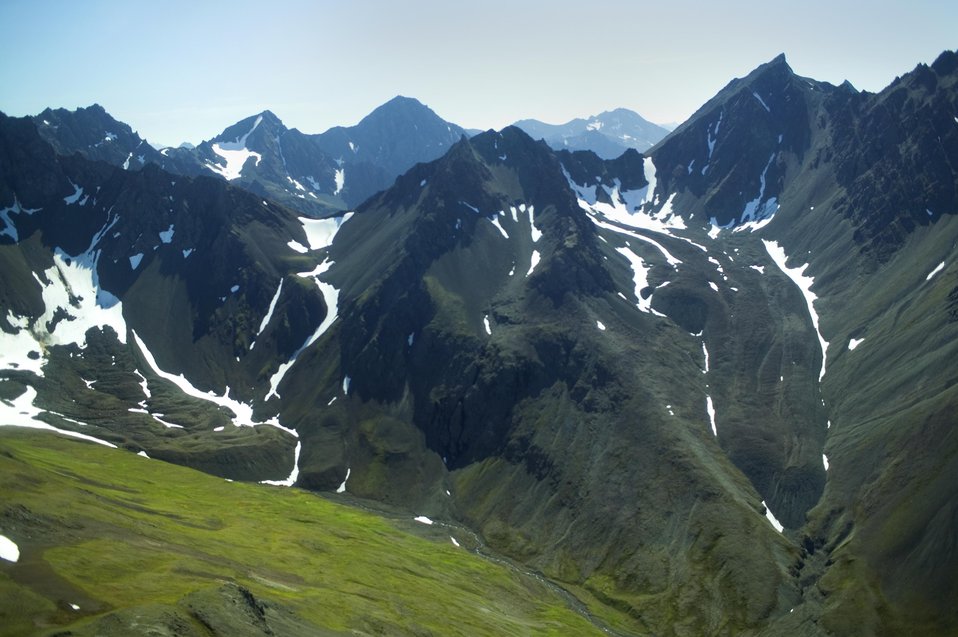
Togiak Nation Wildlife Refuge